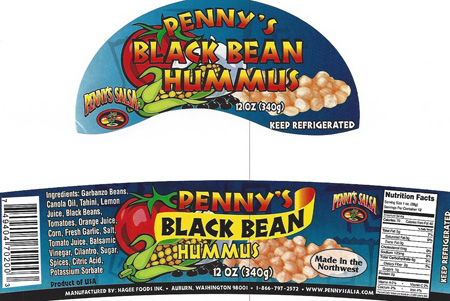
RECALLED – Hummus

July 16, 2013 – Product Recall – Hagee Foods Inc. dba Penny's Salsa Inc. Recalls Hummus Products Because of Possible Health Risk.